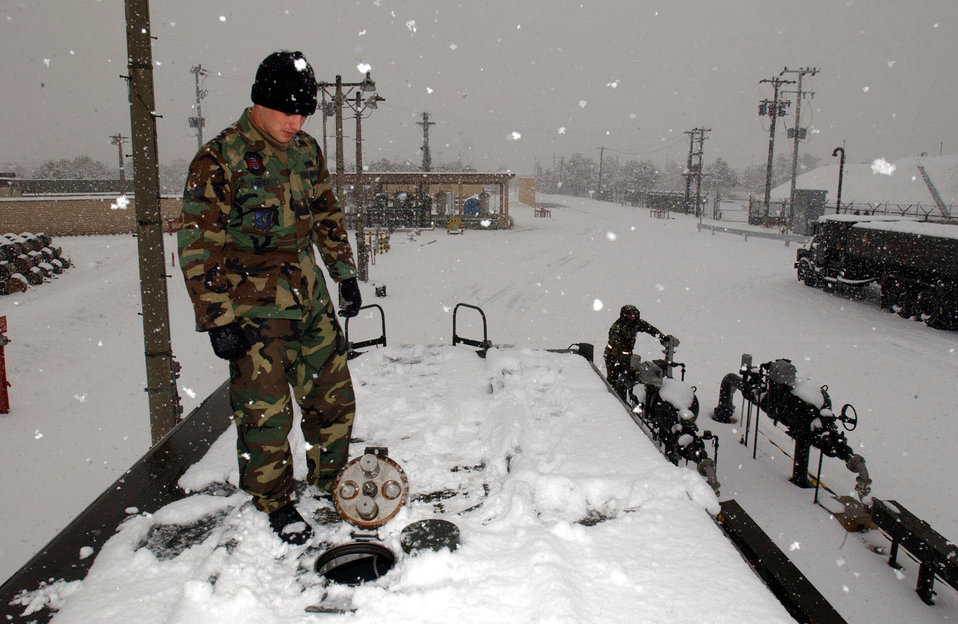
Deploying to snow

KWANG JU AIR BASE, South Korea -- As the snow falls, Airman 1st Class Blake Dortch checks the fuel level while co-worker, Staff Sgt. Michael Nelson, stands ready at the fuel shutoff switch. Both airmen from Kadena Air Base, Japan, participated in a four-day deployment here. They are assigned to the 18th Logistical Readiness Squadron.